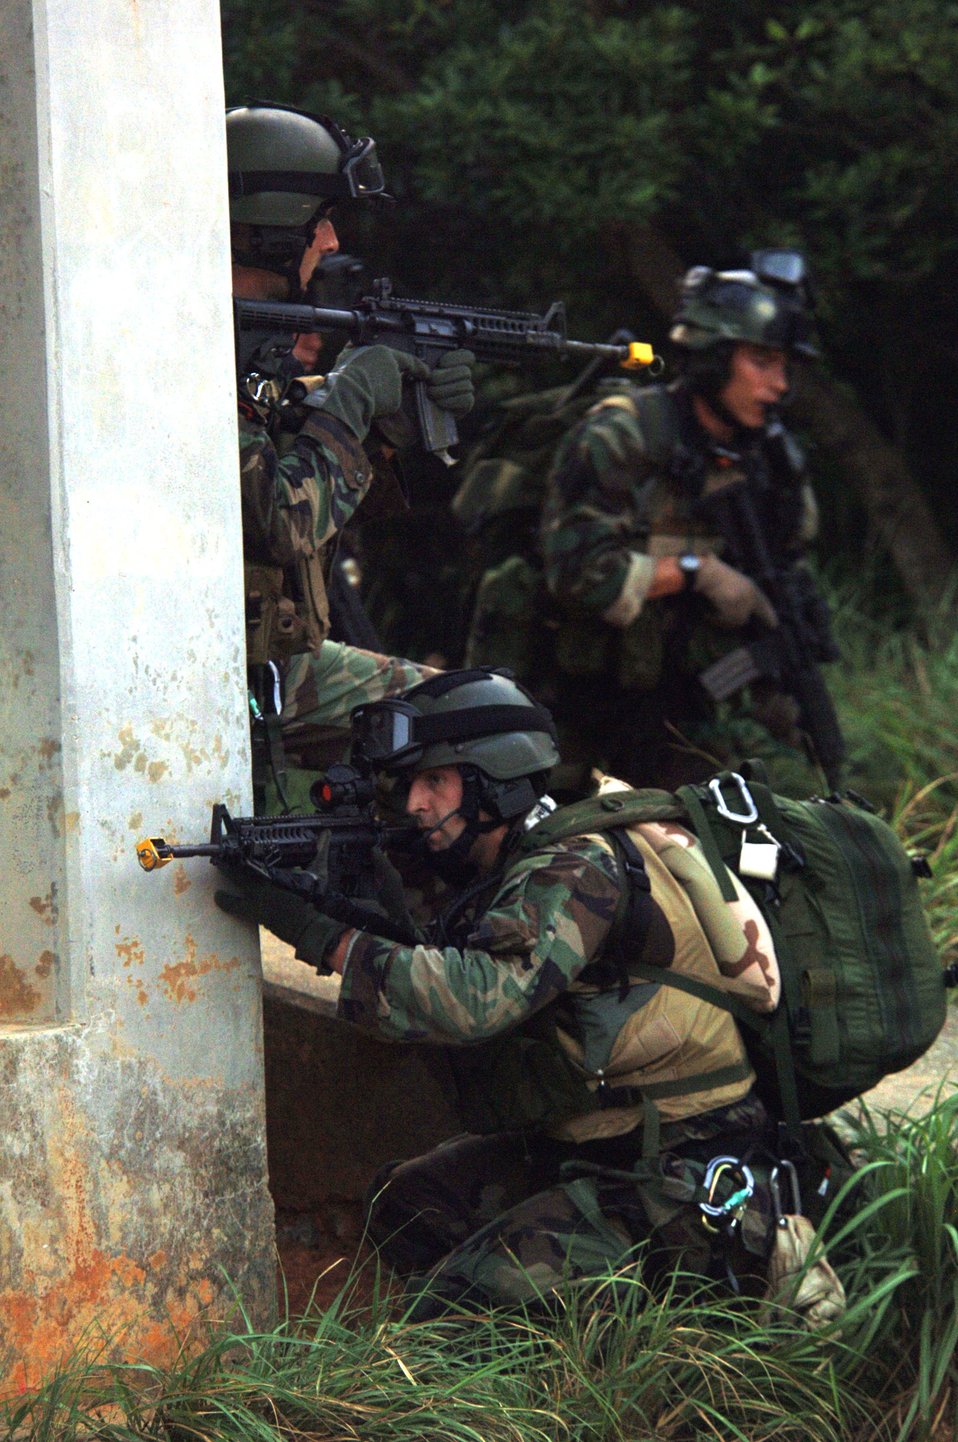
Airmen join Sailors, Marines for JASEX 05

KADENA AIR BASE, Japan -- (From left) Senior Airmen Jonathan Courtright and Sean Cole provide cover for Tech. Sgt. Brandon Casteel as they search for